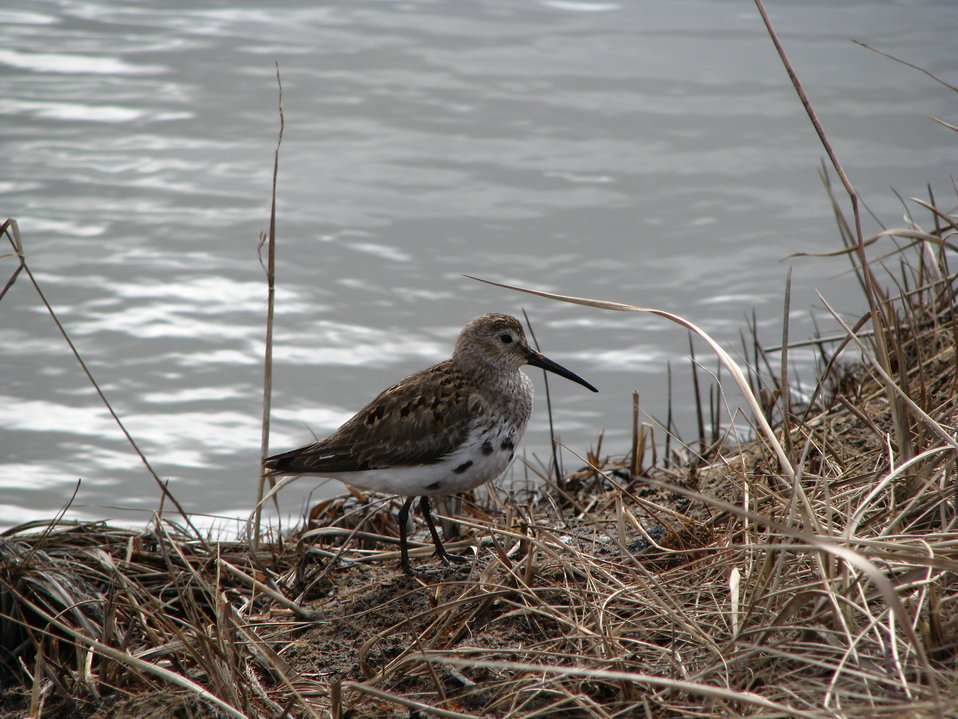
Sandpiper

USFWS Yukon Delta NWR